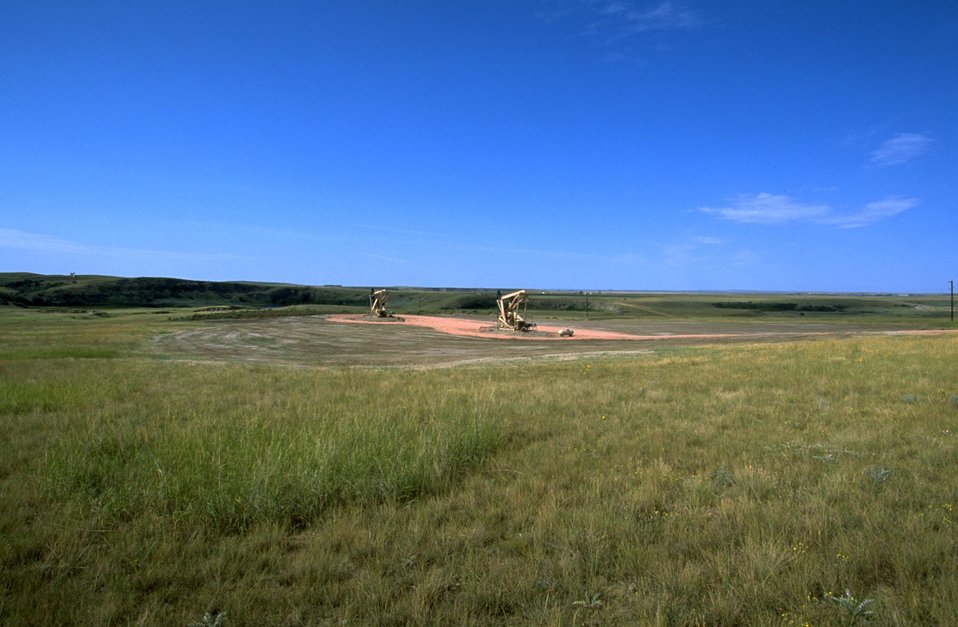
Two producing oil wells on a single pad